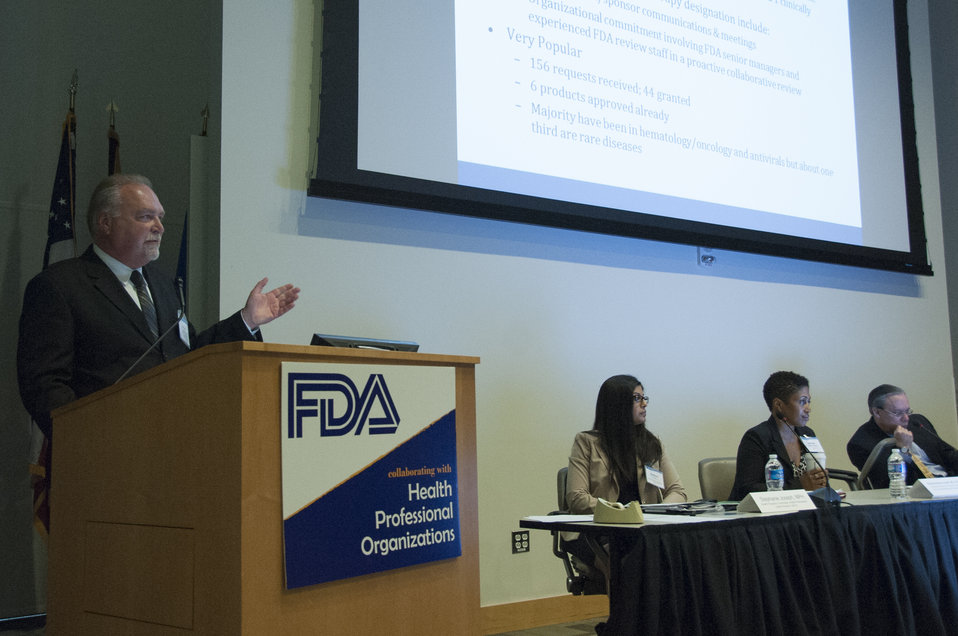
FDA's 2014 Health Professional Organizations Conference (1095)

May 14, 2014; At podium: Richard A. Moscicki, MD, Deputy Director for Science Operations, in FDA's Center for Drug Evaluation and Research. At FDA's third annual Health Professional Organizations Conference, some of FDA’s most senior leaders exchanged views and discussed issues of mutual interest with senior representatives from key health professional organizations. To learn more, go to FDA Voice.

This photo is free of all copyright restrictions and available for use and redistribution without permission. Credit to the U.S. Food and Drug Administration is appreciated but not required.

Privacy and use information: www.flickr.com/people/fdaphotos/